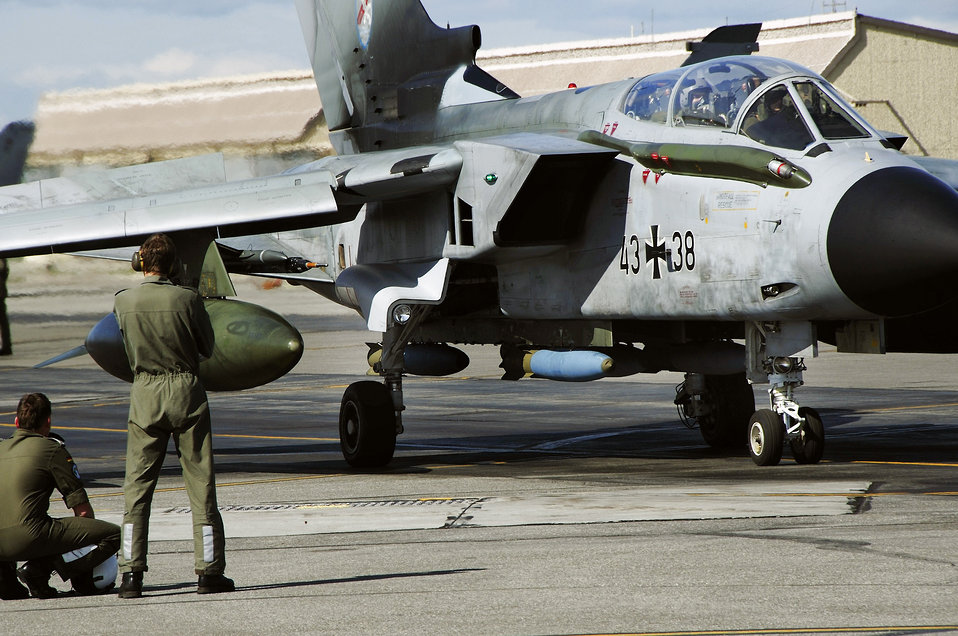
Joint training at Red Flag Alaska 08-3

German crew chiefs watch a Tornado prepare to take off during Red Flag-Alaska 08-3 June 9. Coordinating the training is the responsibility of Airmen with the 353rd Combat Training Squadron at Eielson Air Force Base, Alaska. Coalition and American pilots, aircrews and support members are able to train in a realistic environment during the exercise.